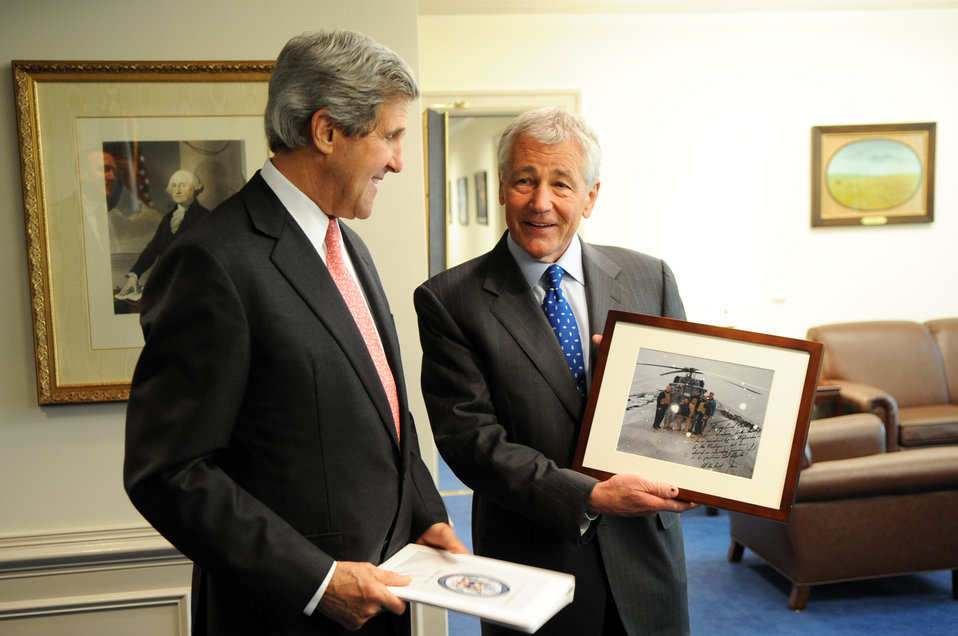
Secretary Kerry Presents Secretary Hagel a Photo of the Two

U.S. Secretary of State John Kerry presents U.S. Secretary of Defense Secretary Chuck Hagel a photo, showing the two on an Afghan mountaintop in 2008 after a Blackhawk helicopter they were riding in made an emergency landing, after their meeting at the Pentagon in Arlington, Virginia, on May 6, 2013. The inscription read, To my friend Chuck. From Vietnam, to the Senate, to a mountain in Afghanistan – to the Pentagon – we have shared an interesting journey! Great to be partners and friends. All the best, John.